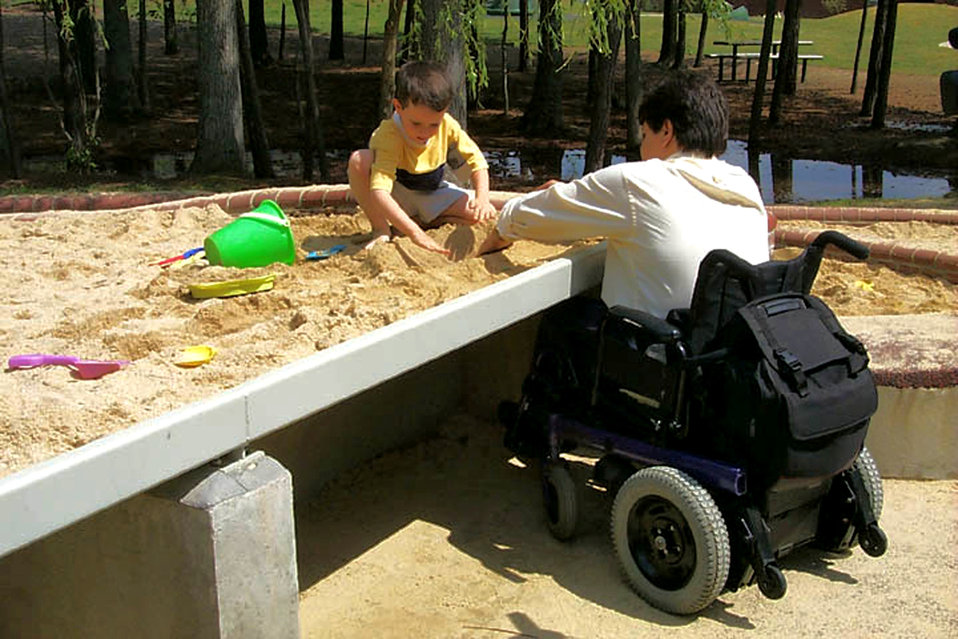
In this 2000 image (and see PHIL# 9083), a father seated in his wheelchair, was playing with his son who was building sand castles in a publicly-accessible sandbox. This sandbox, in a universally designed park, facilitated its use by all children, and adults as well, whether standing or sitting. Here, the father, who used a power wheelchair, was seen pulled up to the raised sandbox. He could play with the boy easily because knee space had been created over one cantilevered side of the sandbox. Designing recreation sites with the mobility-challenged in mind, makes for an overall more user-friendly environment for all, and is quite often made even more efficient from a utilitarian standpoint.